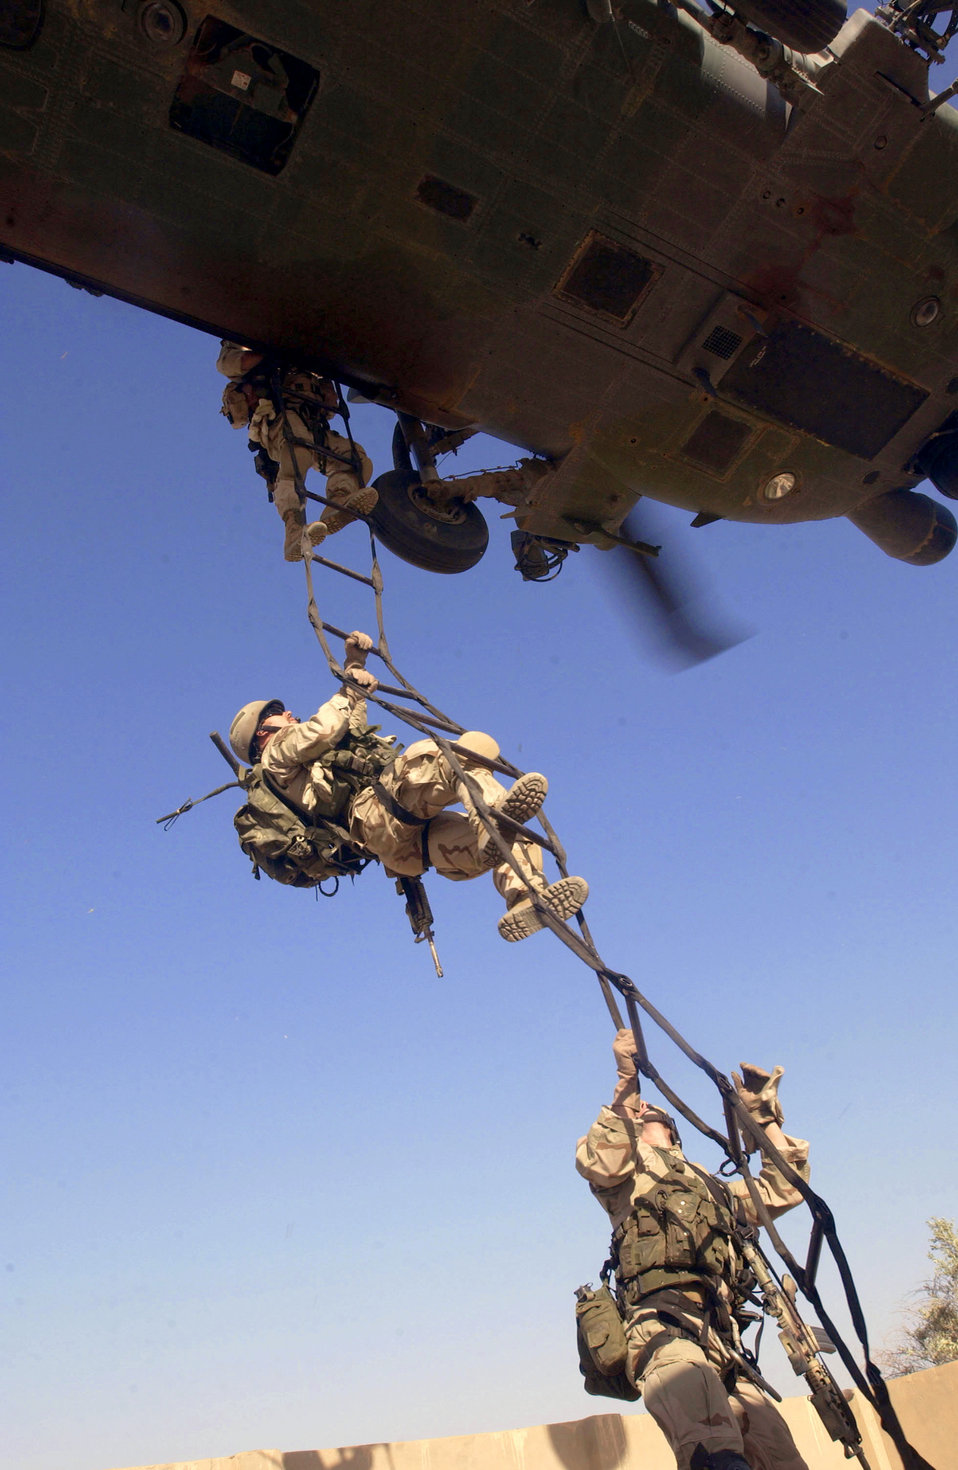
One rung at a time

OPERATION IRAQI FREEDOM -- Air Force Reserve pararescuemen perform a ladder extraction exercise from an HH-60G Pave Hawk helicopter. Members of the 304th Rescue Squadron, Portland International Airport, Oregon are deployed to Baghdad International Airport in support of Operation Iraqi Freedom.